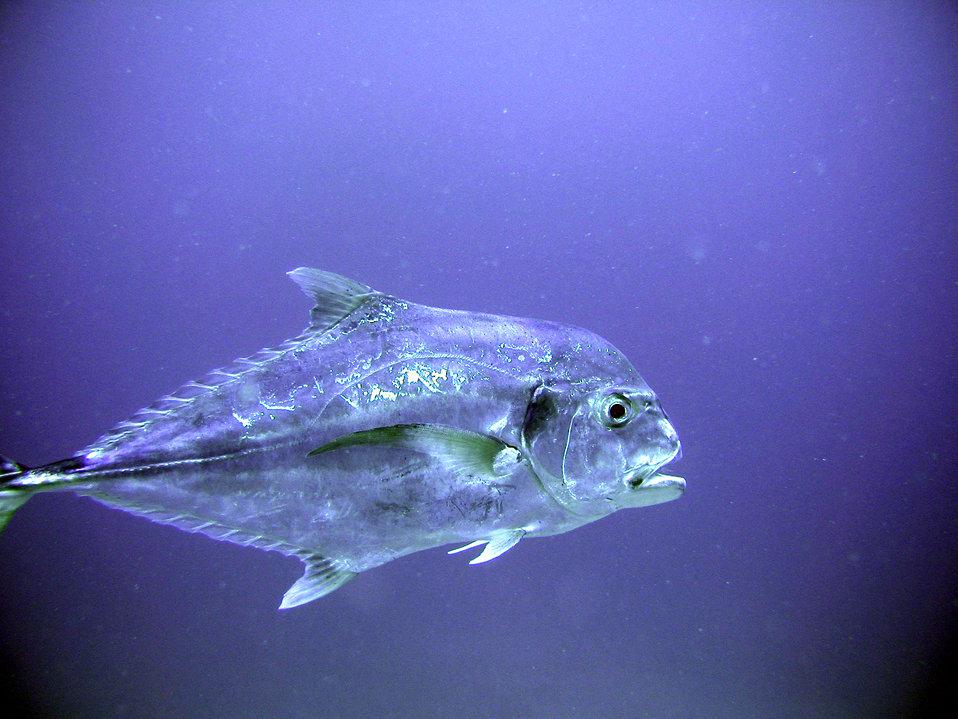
African pompano (Alectis ciliaris)